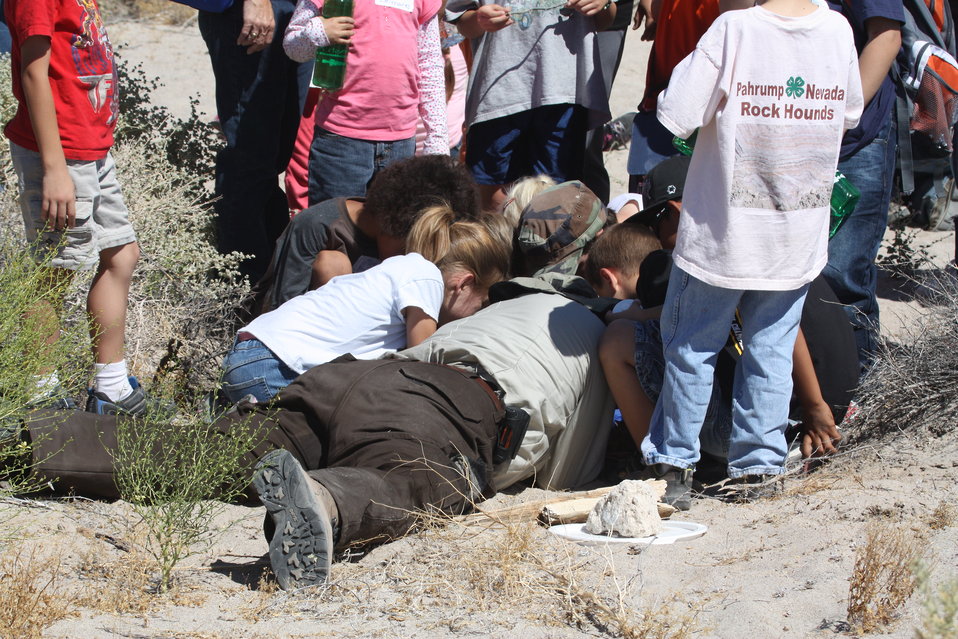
Looking for critters

Kids help USFWS biologist Lee Simons check pitfall traps at Ash Meadows National Wildlife Refuge.